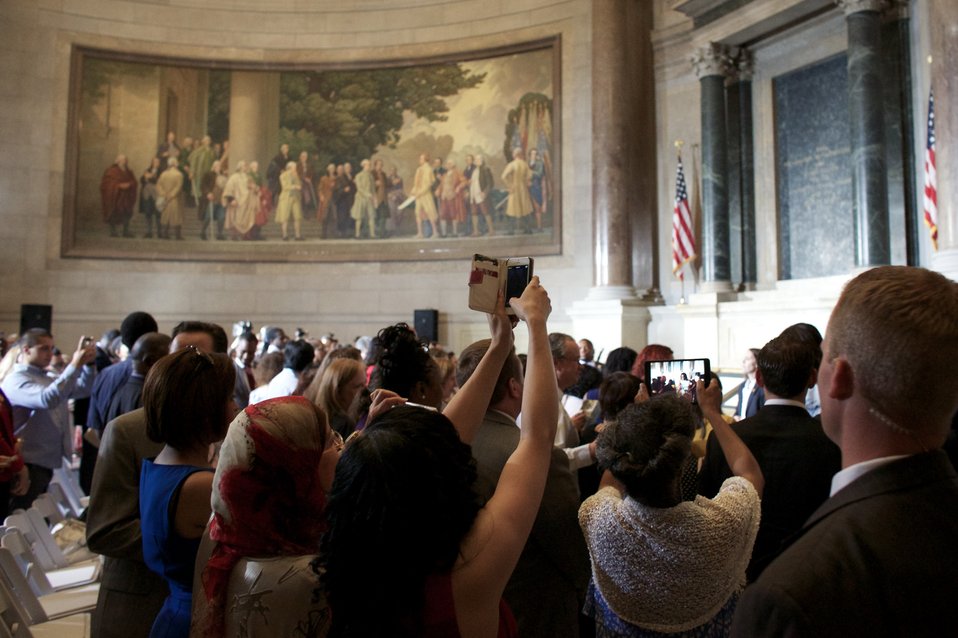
Naturalization Ceremony with Michelle Obama